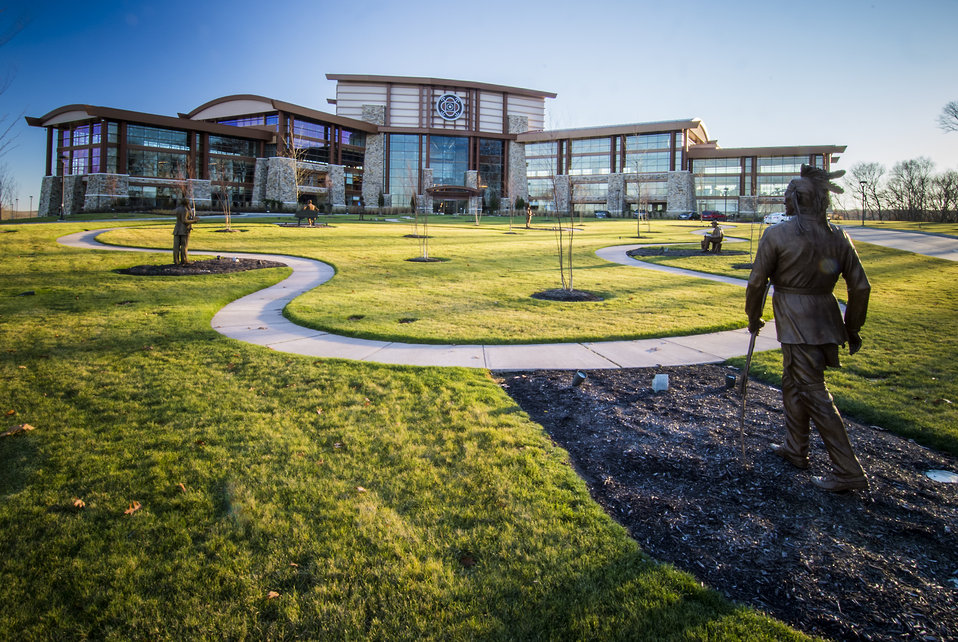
A U.S. Department of Agriculture (USDA) Rural Development (RD) Community Facility Loan was provided to the Mohegan Tribe for the construction of the Mohegan Tribe Community Center and Government Building in Uncasville, CT. USDA’s RD Community Facilities Programs makes and guarantees loans to develop essential community facilities in rural areas and towns of up to 20,000 in population. Loans and guarantees are available to public entities such as municipalities, counties, parishes, boroughs, and special-purpose districts, as well as to non-profit corporations and tribal governments. These funds can be used to construct, enlarge, or improve community facilities for health care, public safety, and public services. The Mohegan Tribe's newly completed Community Center and Government Building allows the tribal government to more fully and effectively administer the tribal government, health, housing and social programs of the Tribe and provide cultural resources and community gathering, and activities for its members. The 160,000 square foot building Center hosts an exhibit celebrating federal recognition, history of Mohegan Chiefs, a new Library and Archives space, Arts and Crafts room, gymnasium, and a new community room to enjoy food and family. The Center will continue the Tribe’s plan for growth and meeting the needs of its members. The ability to finance the project at reasonable rates through the USDA RD Community Facilities Programs ensures that the Tribal government more efficiently and effectively can manage the administration of essential government functions.